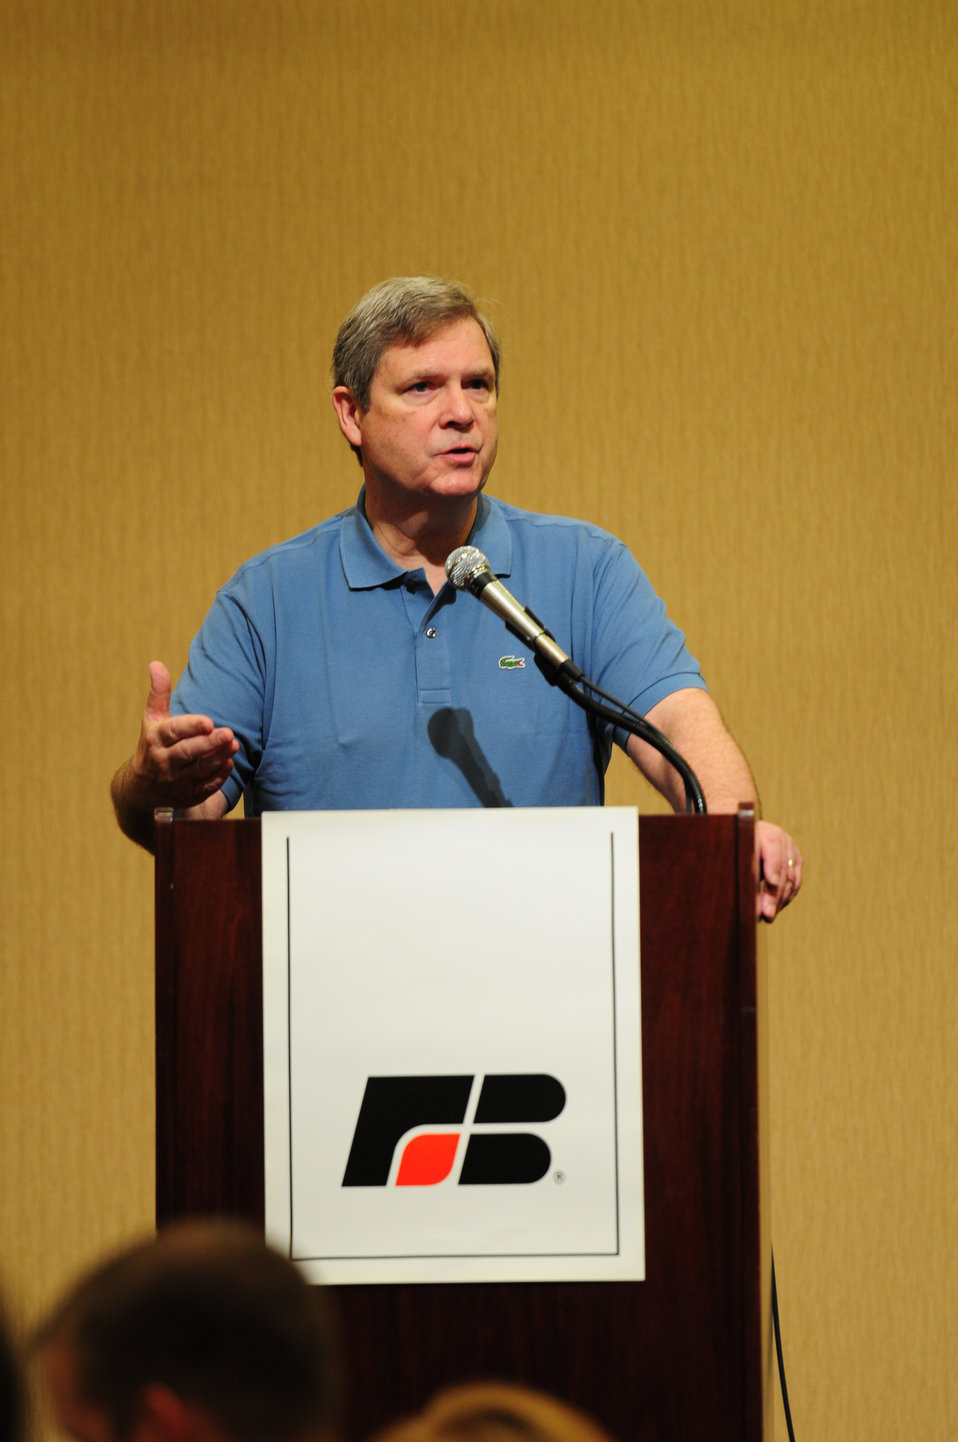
Agriculture Secretary Tom Vilsack speaks at the Iowa Farm Bureau event at the Sheridan Waikiki, in Honolulu, Hawaii, on Sunday, January 8, 2012.